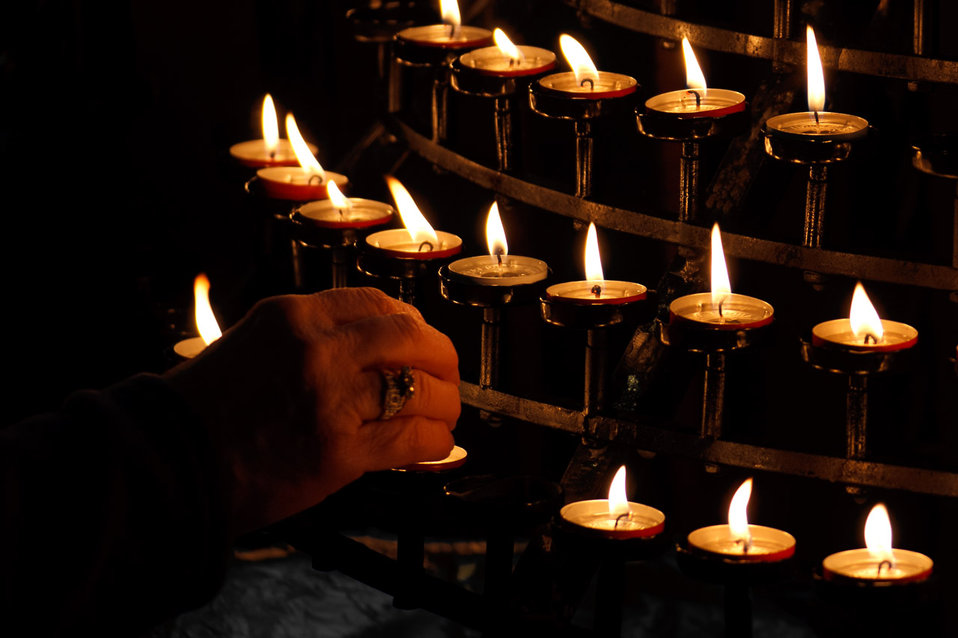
Candle lighting

An older woman's hand lighting candles at church.